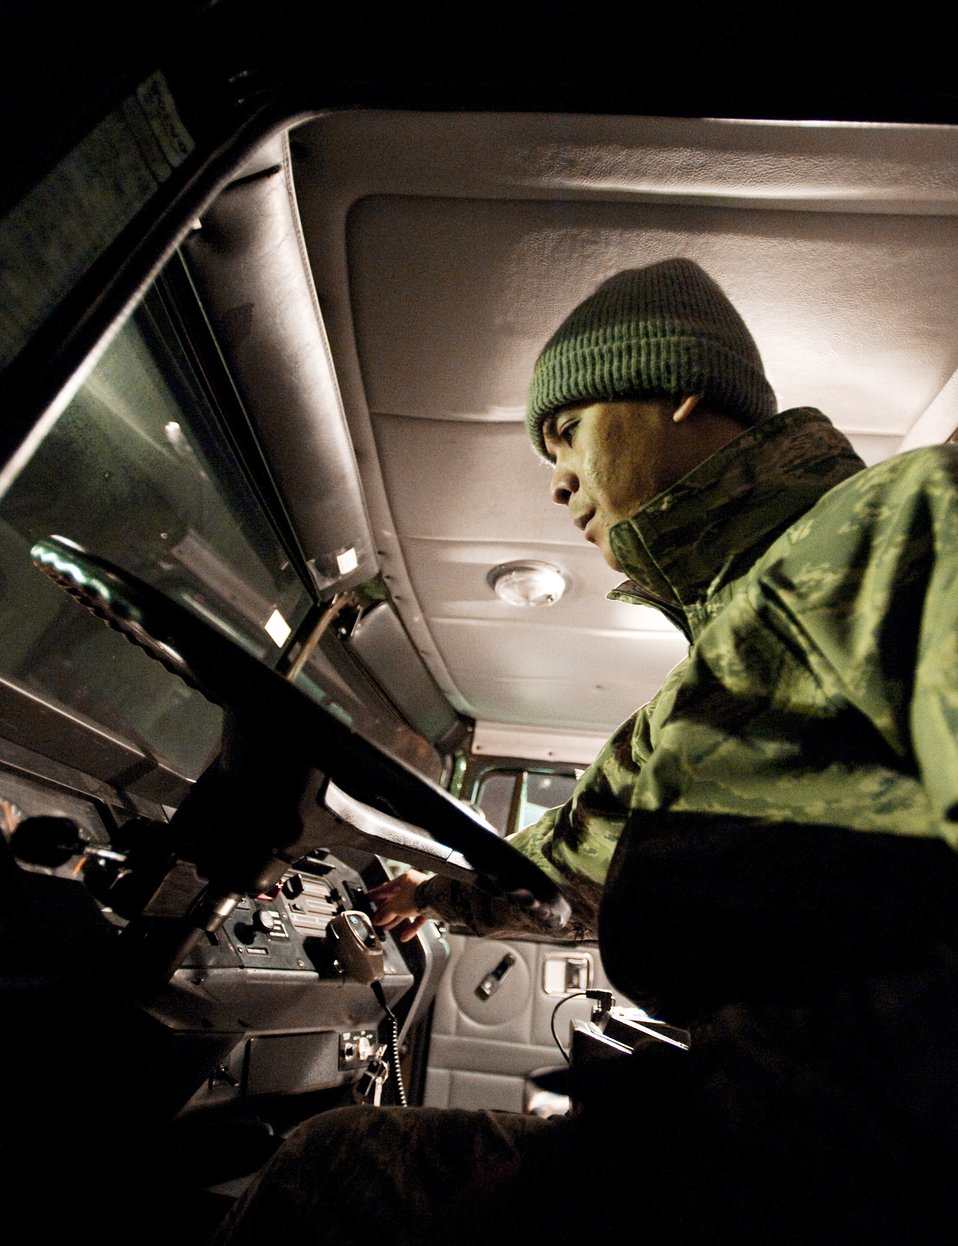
Fuels on a freezing day at Misawa

Staff Sgt. Dennis Orejudos, 35th Logistics Readiness Squadron fuels expeditor, starts an R-11 fuel truck outside the fuels service center Jan. 19, 2010, at Misawa Air Base, Japan. When the temperature drops below 32 degrees F, the fuels expeditor starts all the fuel trucks to keep the engines warm and useable.